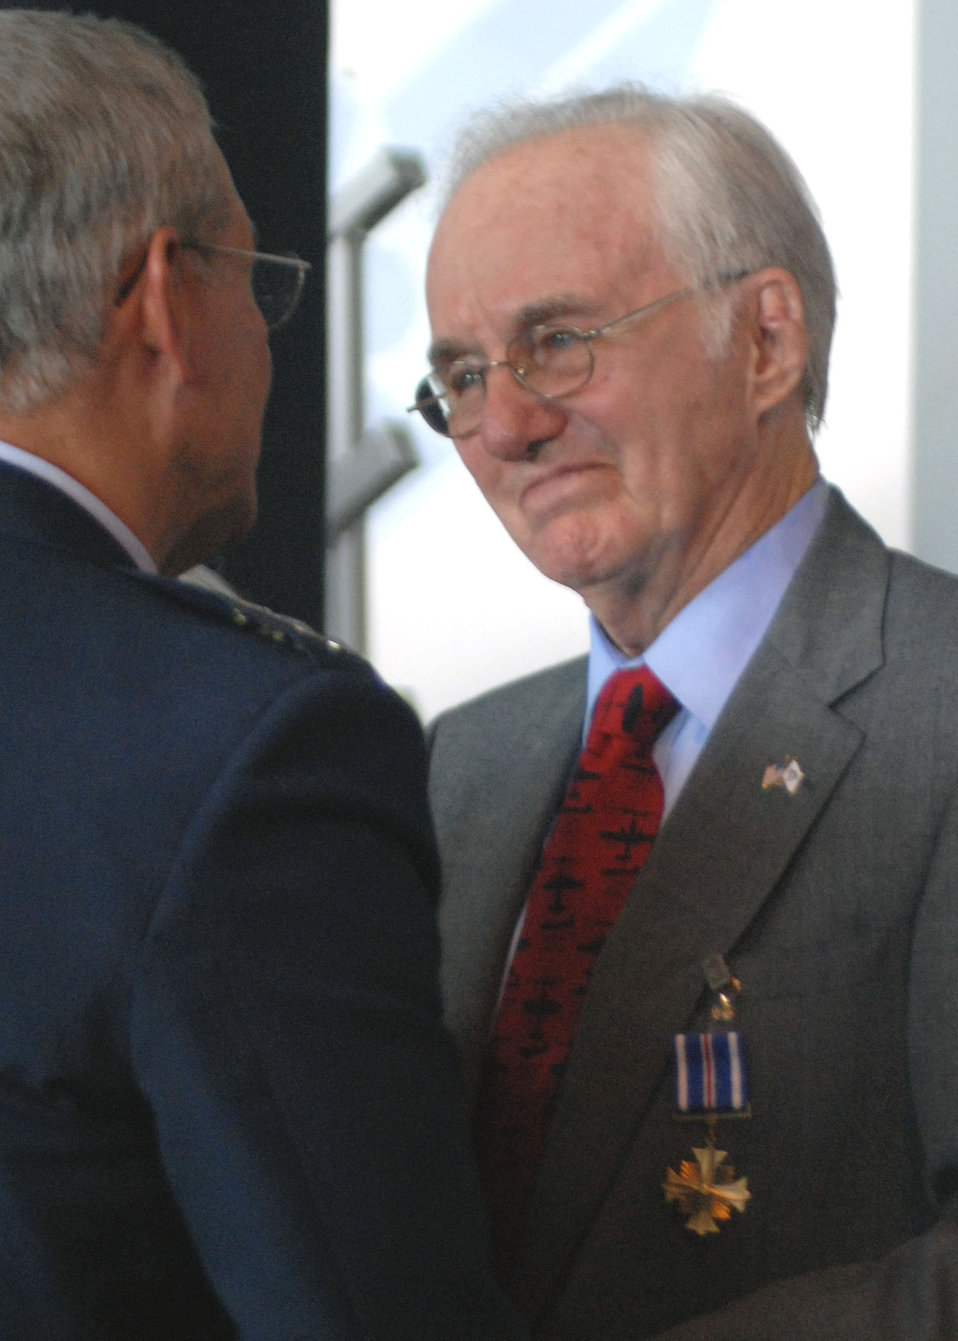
WWII vet awarded Distinguished Flying Cross

Retired Col. Vincent Fonke, who ended his 30-year career at Pope Air Force Base, N.C., was awarded the Distinguished Flying Cross July 20 for actions he took during World War II while a bomber pilot assigned to the 324th Squadron of the Army Air Corps' 91st Bomb Group.